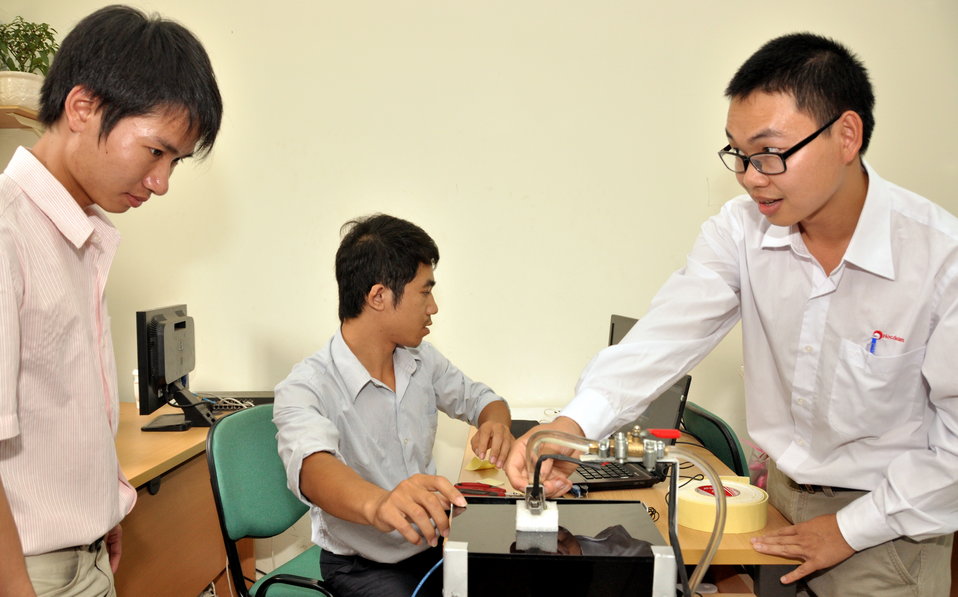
Ho Chi Minh City University of Technical Education, HEEAP Partner

Faculty Member Nguyen Ba Hai
January 11, 2013